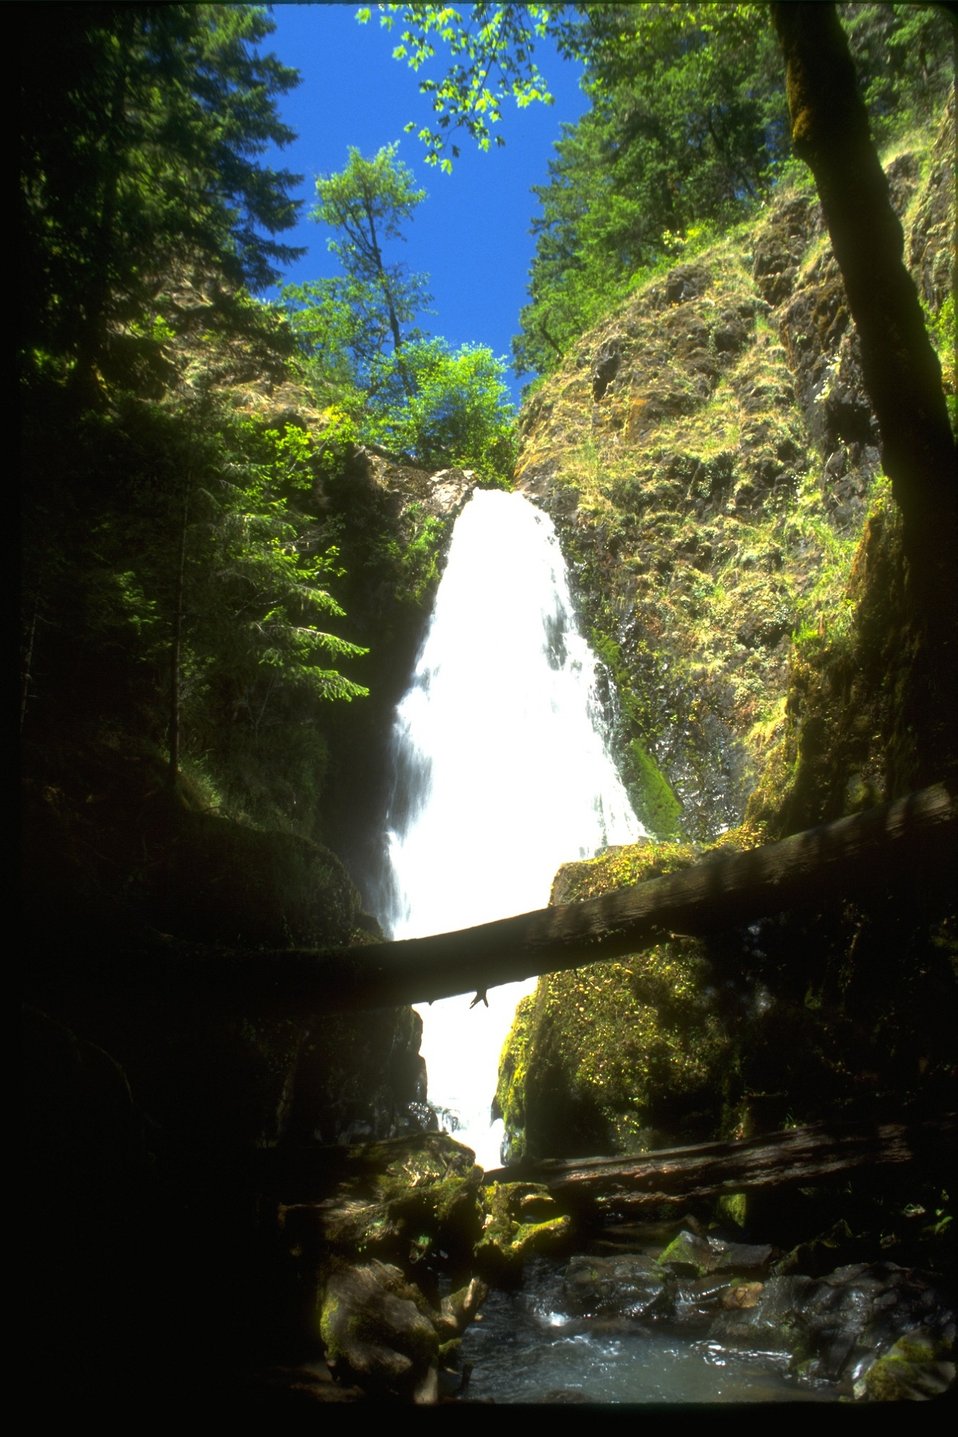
Scenic pitcture of Susan Creek Falls.